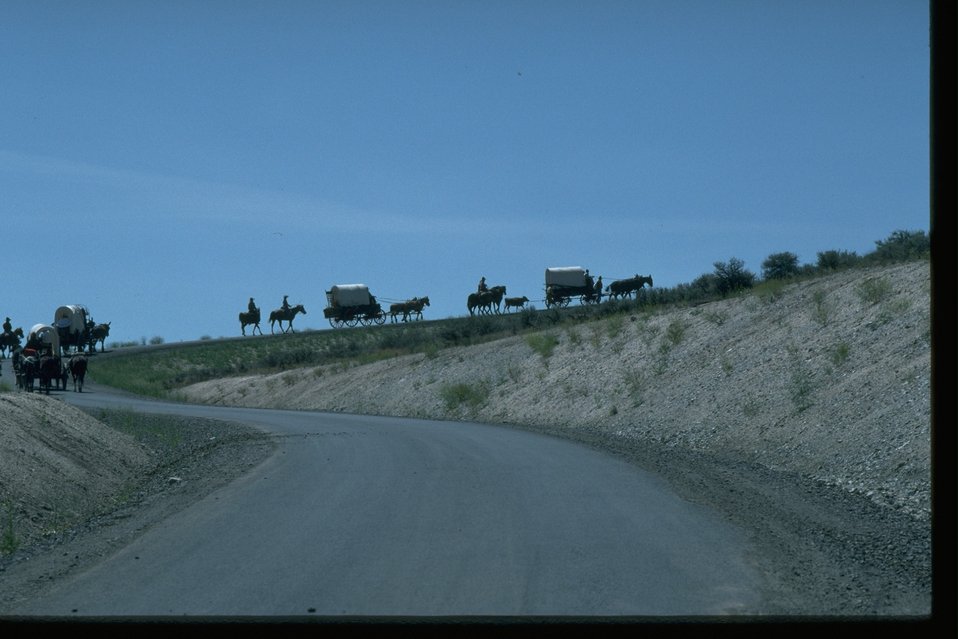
Wagon Train scene at Flagstaff Hill.